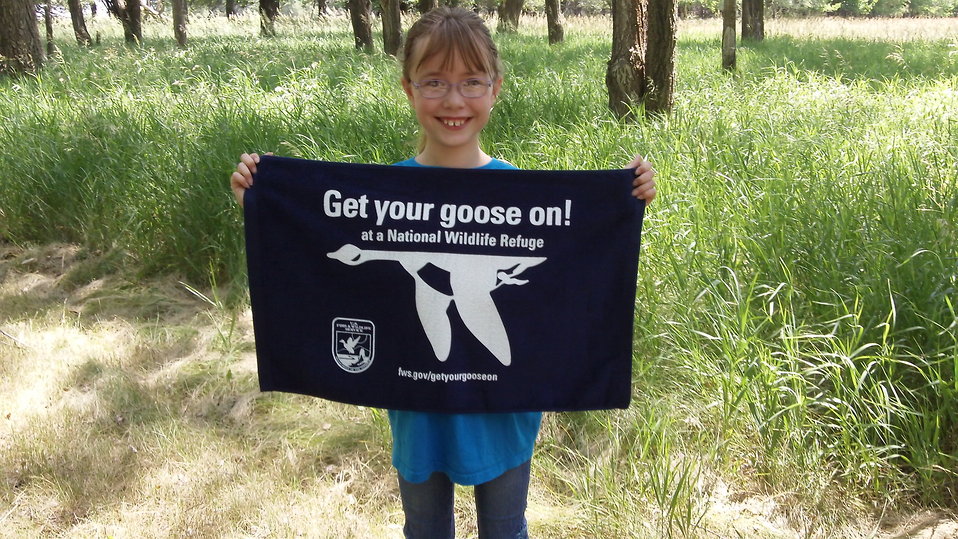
Get Your Goose On!

Photo taken at Huron Wetland Management District in east-central South Dakota.